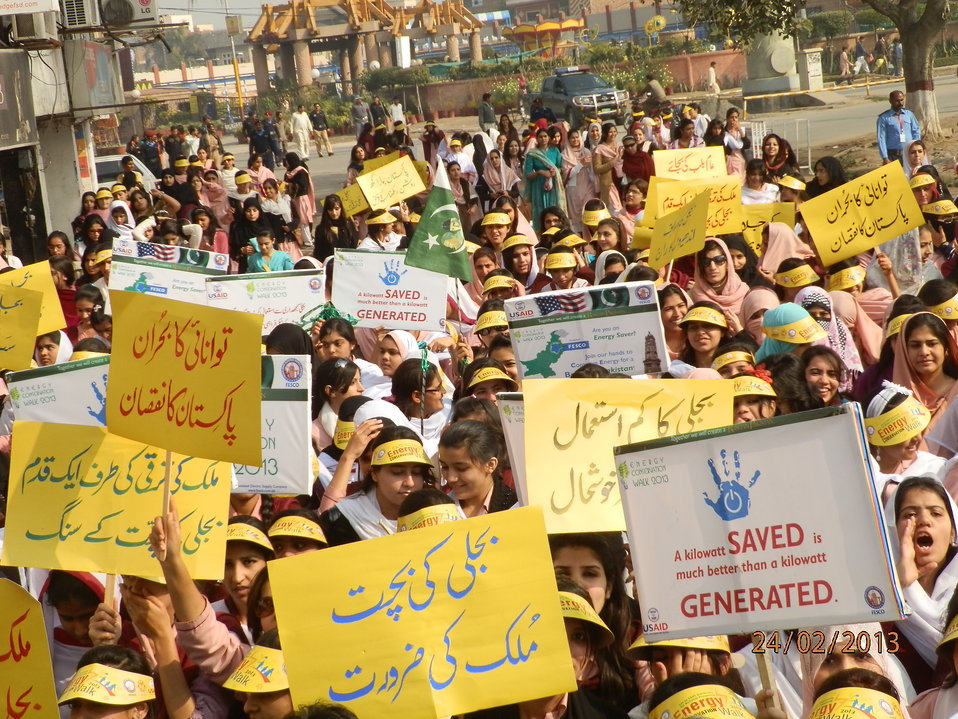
USAID organises Energy Conservation Walk in Faisalabad

USAID Power Distribution Program in collaboration with Faisalabad Electric Supply Compnay (FESCO) conducted an Eenergy Conservation Walk in Faisalabad to spread the awareness about significance of opting energy efficient ways in such times of energy crisis. A total of 4000 students from different institutions of FESCO operated region participated in this walk.

“I was unaware that keeping your TV on stand-by consumes 8KV of electricity. We all hope that all of us getting together would make the general population more aware of the benefits of energy conservation” Student from Faisalabad Fatima Zia